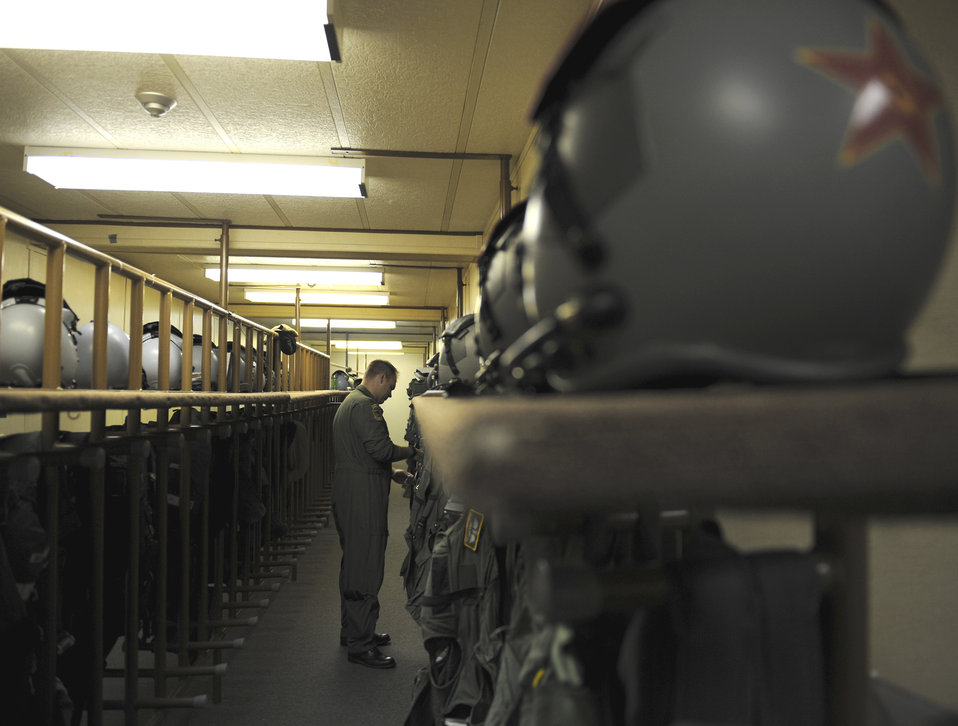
Maple Flag 42

Capt. Joshua Platt, an F-15E Strike Eagle pilot assigned to the 390th Fighter Squadron, Mountain Home Air Force Base, Idaho, inspects his gear in preparation for a training mission during exercise Maple Flag 42 at 4 Wing Cold Lake, Canada, June 8. Maple Flag is a Canadian-sponsored and Air Combat Command supported exercise that provides aircrews simulated air and ground combat training to coalition forces in a NATO environment.